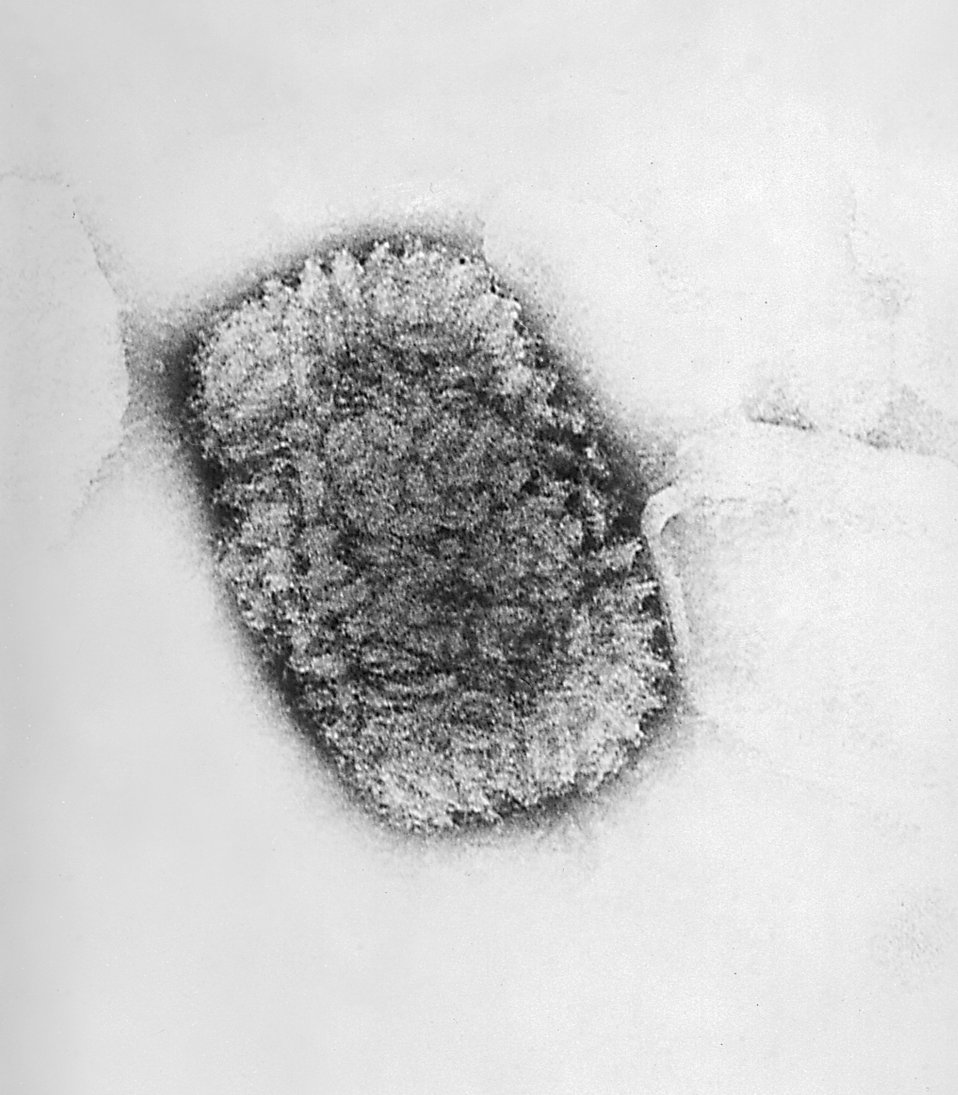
Electron micrograph of a Vaccinia Virus.